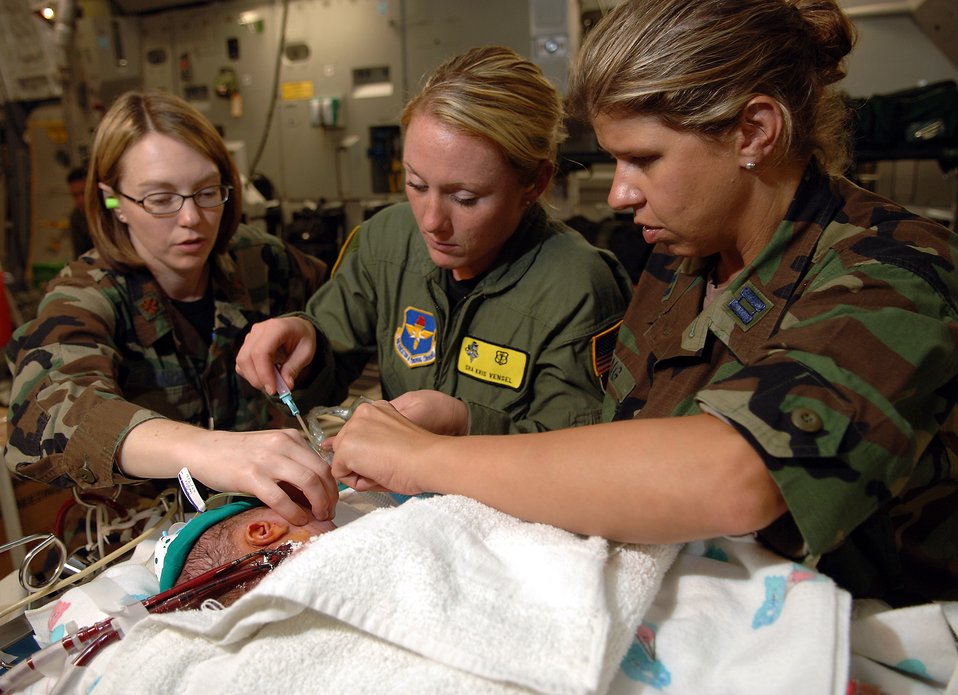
ECMO medical team transports newborn from Puerto Rico

(From left) Capt. Jeanette Gonzalez, Senior Airman Kris Vensel and Capt. Karen Long administer medications to 3-day-old Stuart Parker aboard a C-17 Globemaster III on July 21. An Extracorporeal Membrane Oxygenation team comprised Air Force and Army medical specialists from the Wilford Hall Medical Center at Lackland Air Force Base, Texas, flew to San Juan, Puerto Rico, to transport Stuart to San Antonio for more advanced care. Captain Gonzalez is a neonatal doctor, Airman Vensel is a respiratory therapist and Captain Long is a neonatal intensive care nurse at Wilford Hall Medical Center.